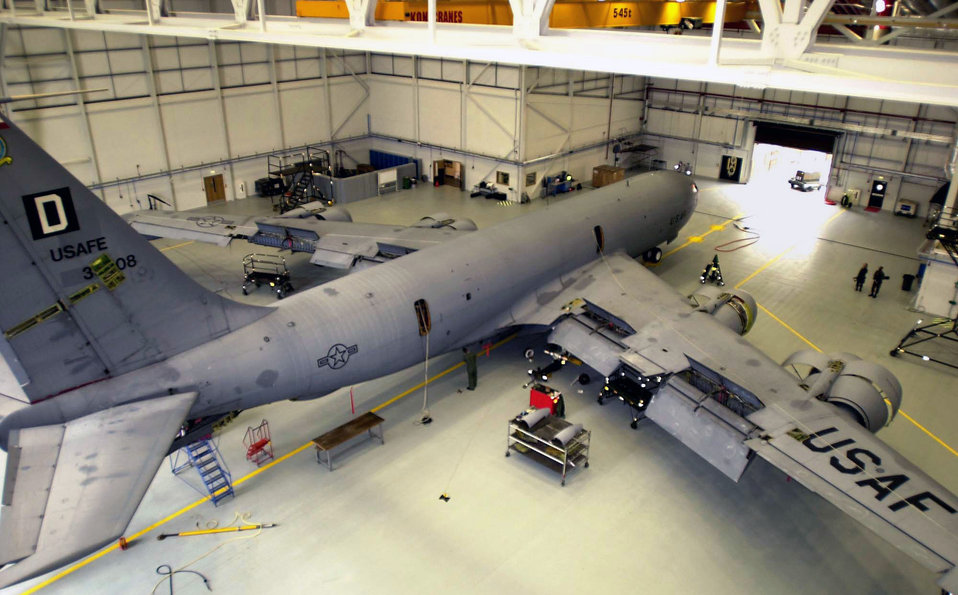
New tanker to bring increased capabilities to warfighter

A KC-135 Stratotanker undergoes an isochronal inspection at Royal Air Force Mildenhall, England. The inspection begins with all access panels being removed to check flight controls. Air Force officials announced the selection of the Northrop Grumman company to replace the aging KC-135 and to produce up to 179 of the new air refuelers.